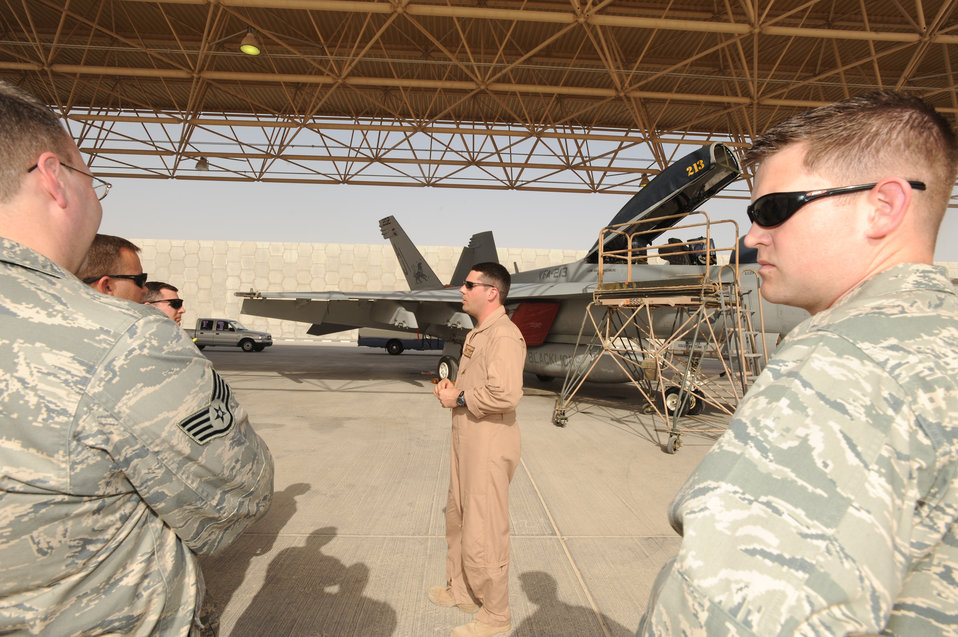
379th AEW hosts navy F/A-18s

Lt. Cmdr. Doug Langenberg, a naval aviator from the U.S.S. Theodore Roosevelt's Strike Fighter Squadron 213, talks about the F/A-18F Super Hornet March 17 with Airmen from the 379th Air Expeditionary Wing at an air base in Southwest Asia who assisted the Sailors as they participated in Exercise Eastern Angler. The exercise is a regular event designed to foster good relations and provide a crossflow of ideas between U.S. and host nation servicemembers.